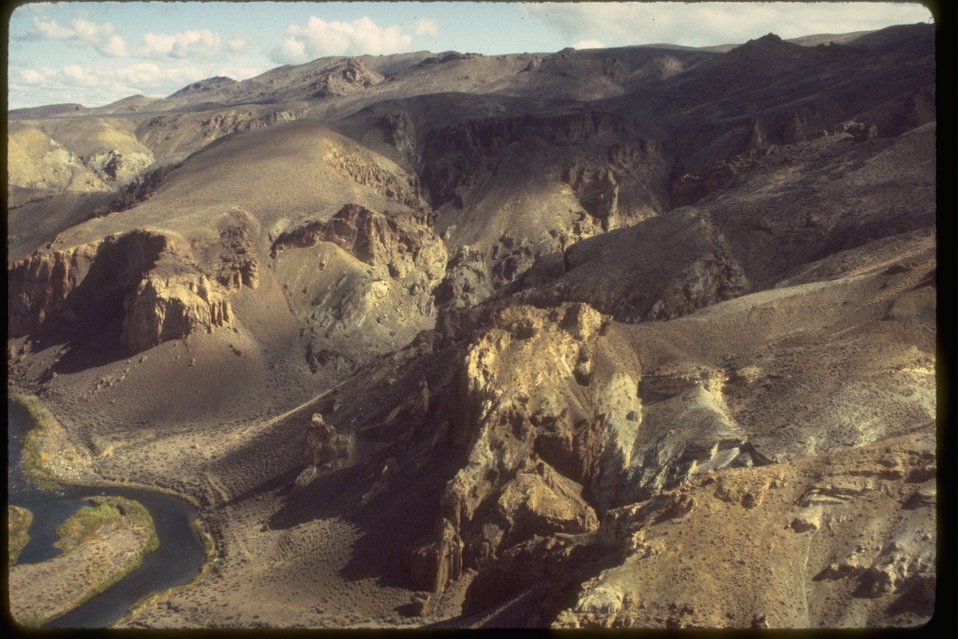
Aerial view of river in Blue Canyon Wilderness Study area. OR 3-73